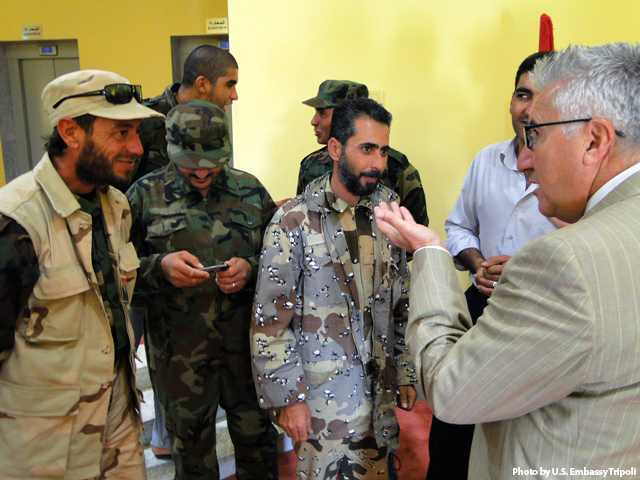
Misurata Brigade Members Welcome Ambassador Cretz to Misurata

Misurata brigade members welcome U.S. Ambassador to Libya Gene Cretz to their city in Misurata, Libya, on November 26, 2011.